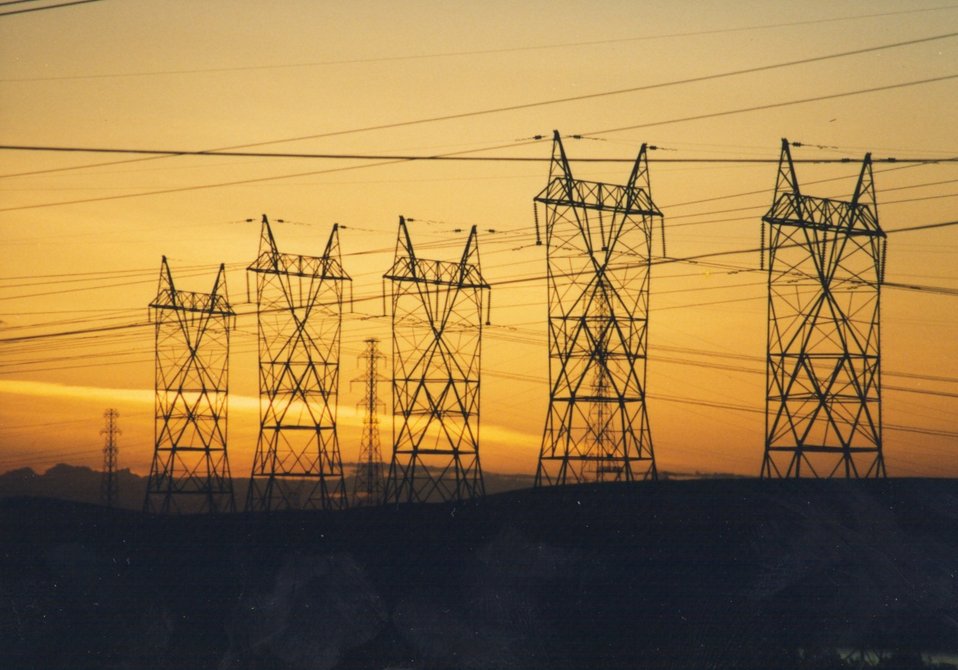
Pacific Northwest National Laboratory researchers are looking at energy production and transportation issues to help solve our country's power shortages.